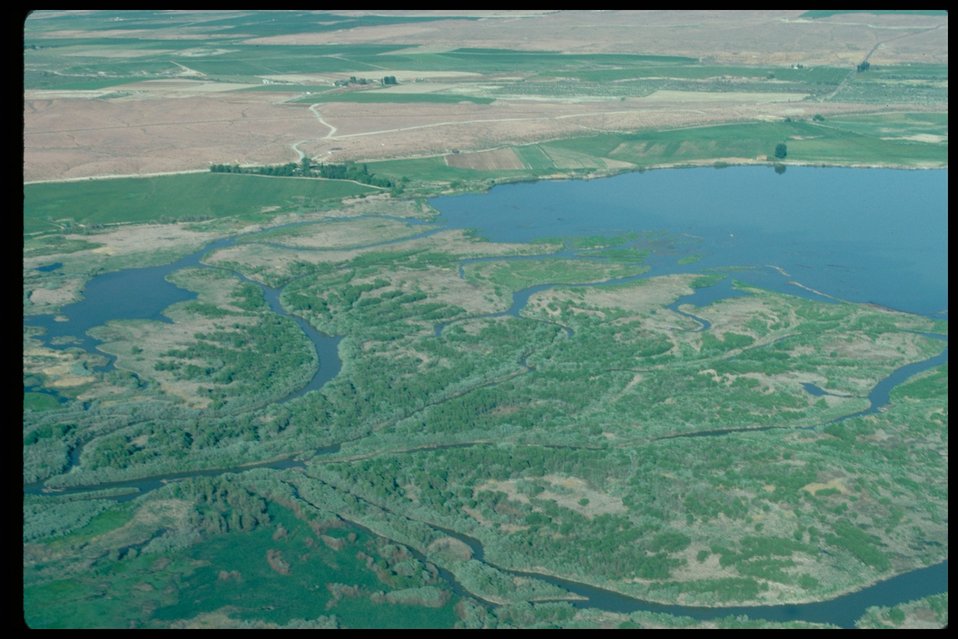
Mouth of Bruneau River Birds of Prey National Conservation Area BOP Owyhee Field Office LSRD Lower Snake River District